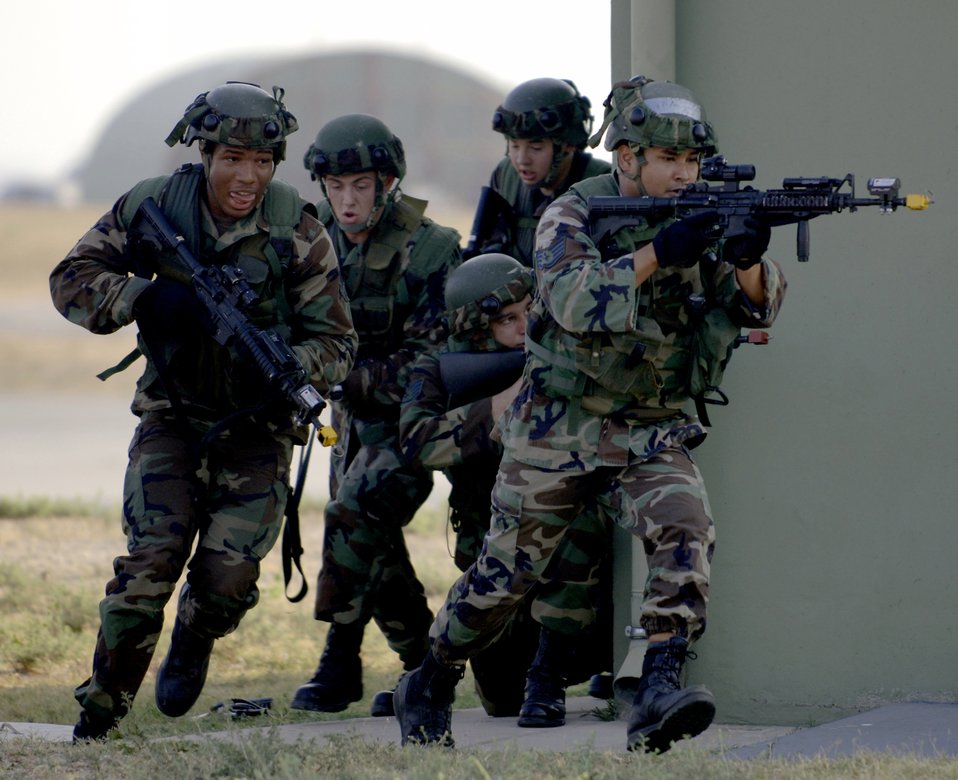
Moving in

Airmen of the 39th Security Forces Squadron move in on opposing forces during a force-on-force exercise on the flightline Aug. 21 Incirlik Air Base, Turkey. Exercises allow the 39th SFS Airmen to continually improve their combat tactics in a safe environment.